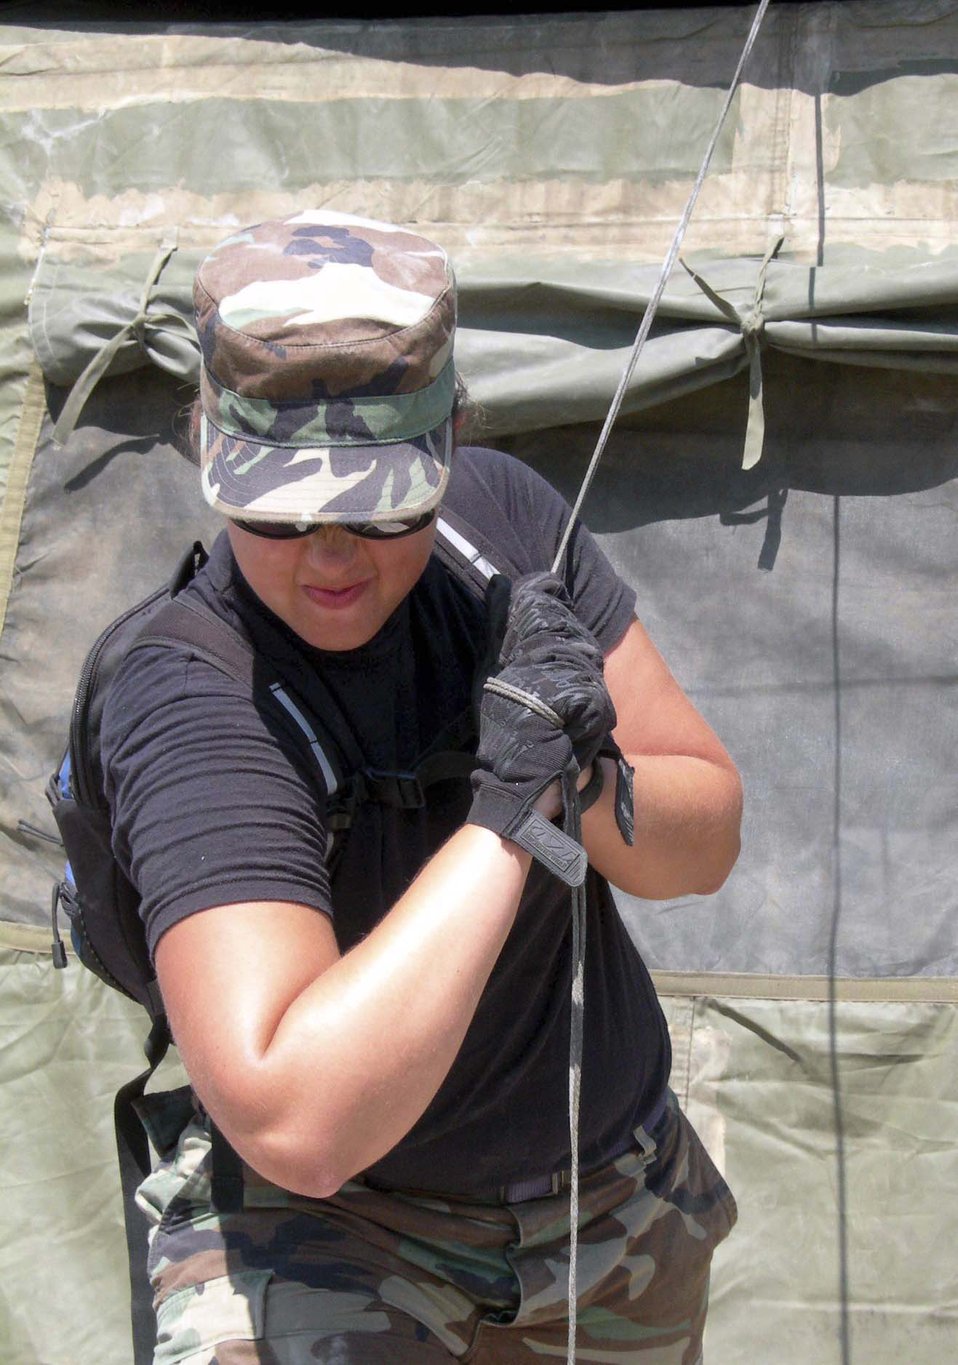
Joint operations

LOUIS ARMSTRONG NEW ORLEANS INTERNATIONAL AIRPORT, La. -- Airman 1st Class Alyson Baird tightens the stanchion for a tent Sept. 8. She and other Airmen with the 4th Expeditionary Civil Engineer Squadron worked with Soldiers from the 82nd Airborne Division to build a tent city here for Soldiers supporting humanitarian efforts in New Orleans. Airman Baird is deployed from McGuire Air Force Base, N.J.